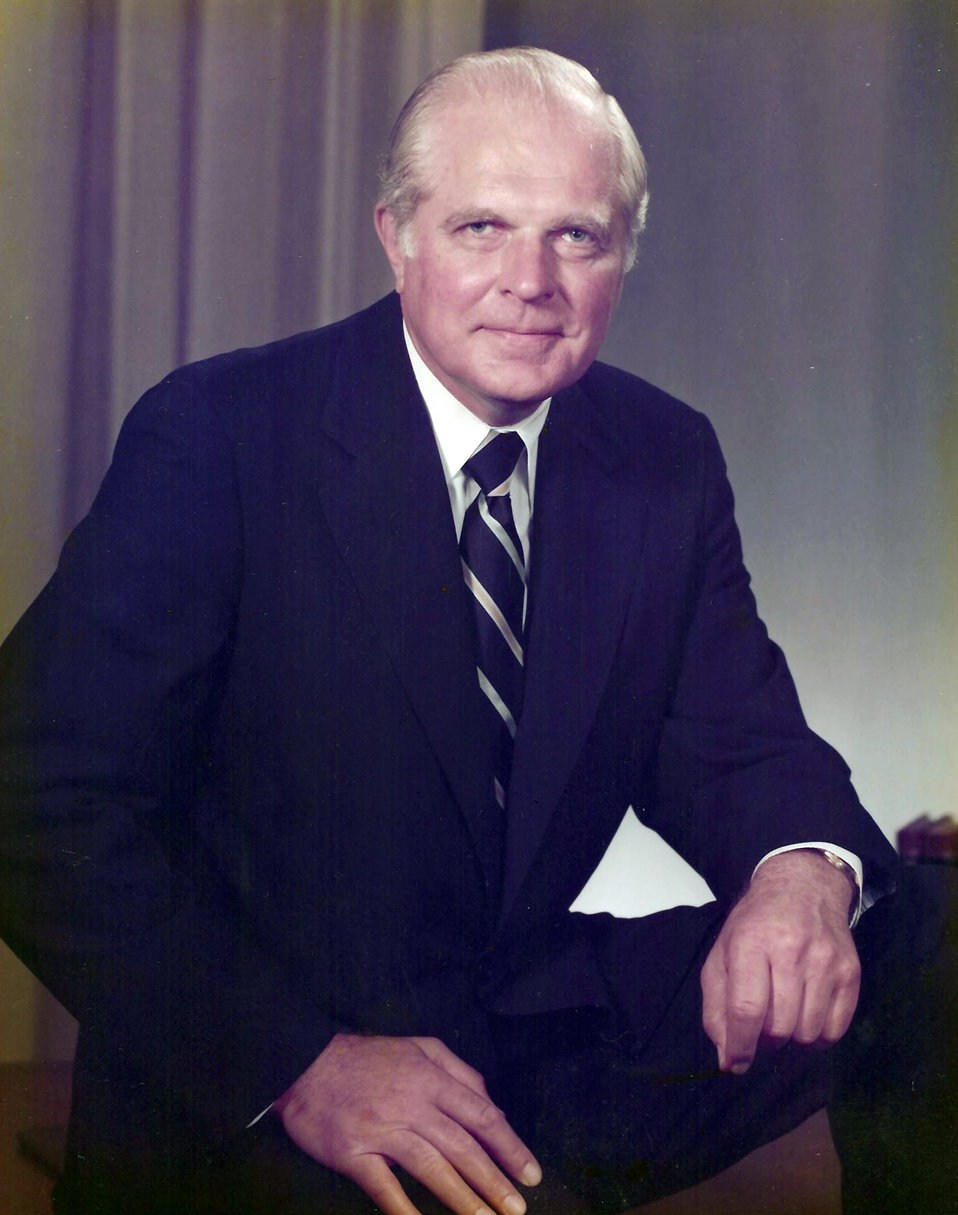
Former secretary of the Air Force dies

Former Secretary of the Air Force John C. Stetson died Aug. 2 at his home in Lake Forest, Ill.